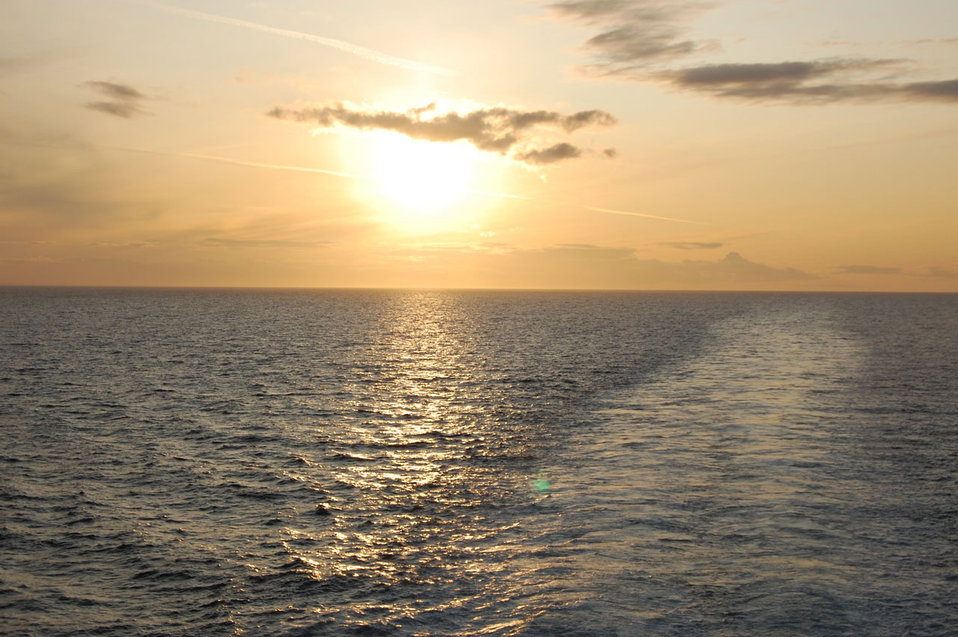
Sunset on the north sea.